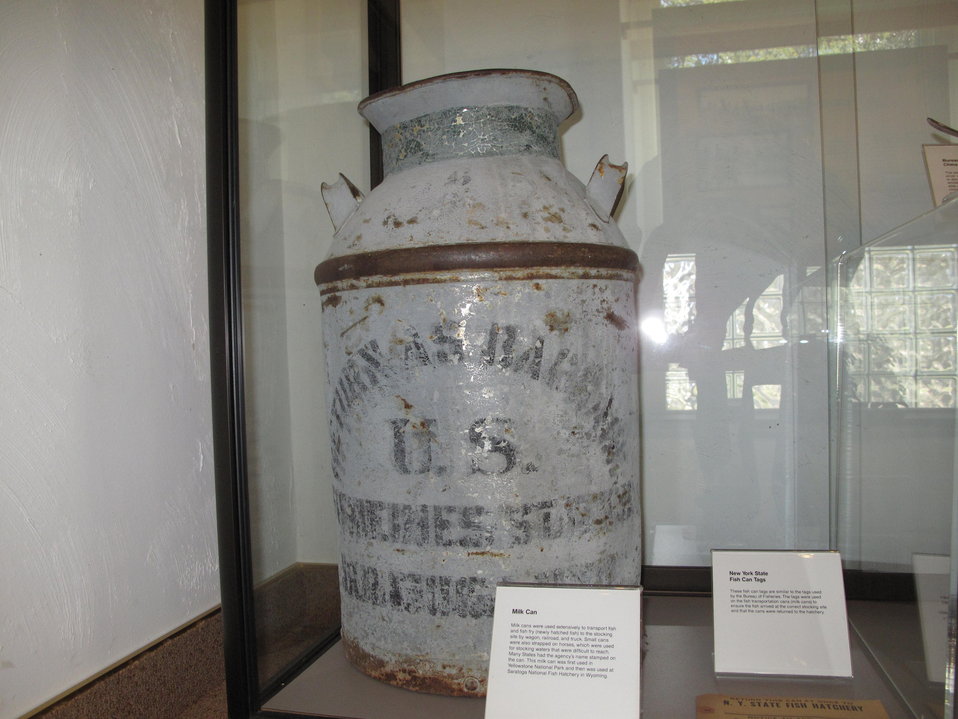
Milk can at Leadville National Fish Hatchery in the Visitor's Center.